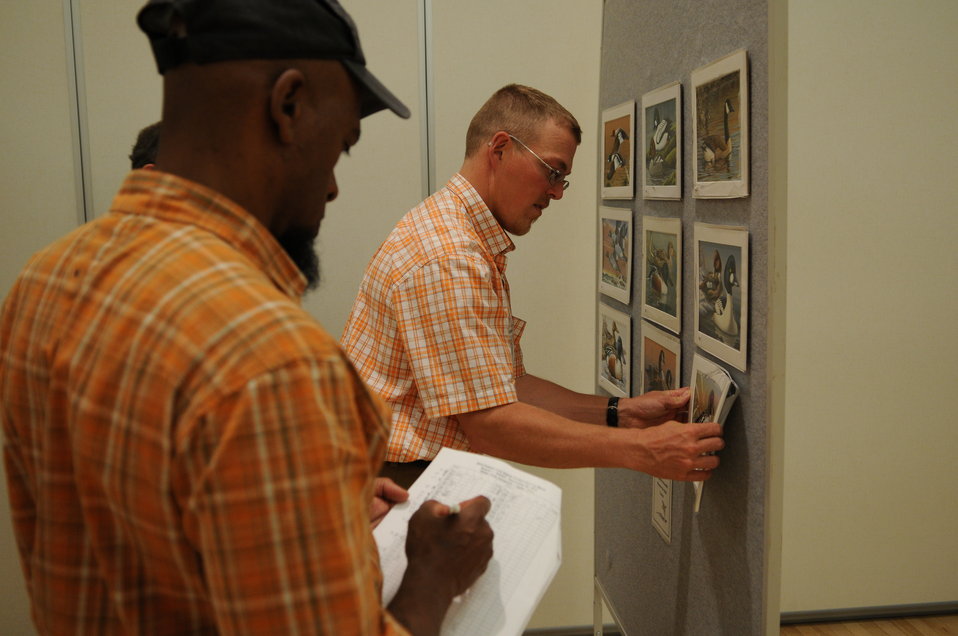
Judging

The U.S. Fish & Wildlife Service sponsored the 2012 Federal Duck Stamp Art Contest September 28 and 29 in Ogden, Utah, at Weber State University. A panel of five judges was responsible for choosing the art work used to design the 2013-2014 Migratory Bird Hunting and Conservation Stamp.